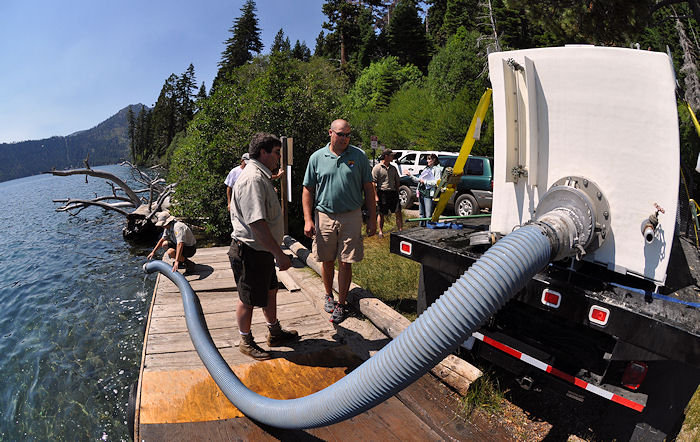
Fallen Leaf Lake trout stocking

Stocking more than 8,000 Lahontan cutthroat trout in Fallen Leaf Lake, Tahoe Basin, Calif., September 10, 2010.